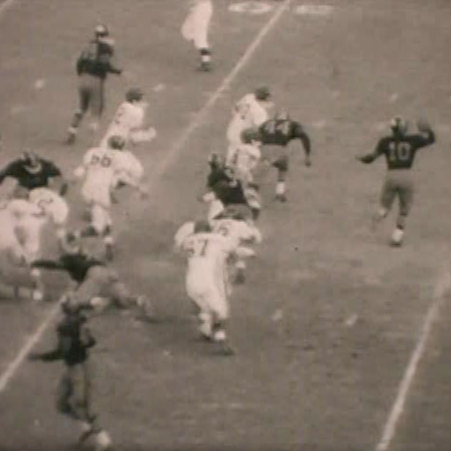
Quarterback kurt schmoke on thanksgiving day 1965